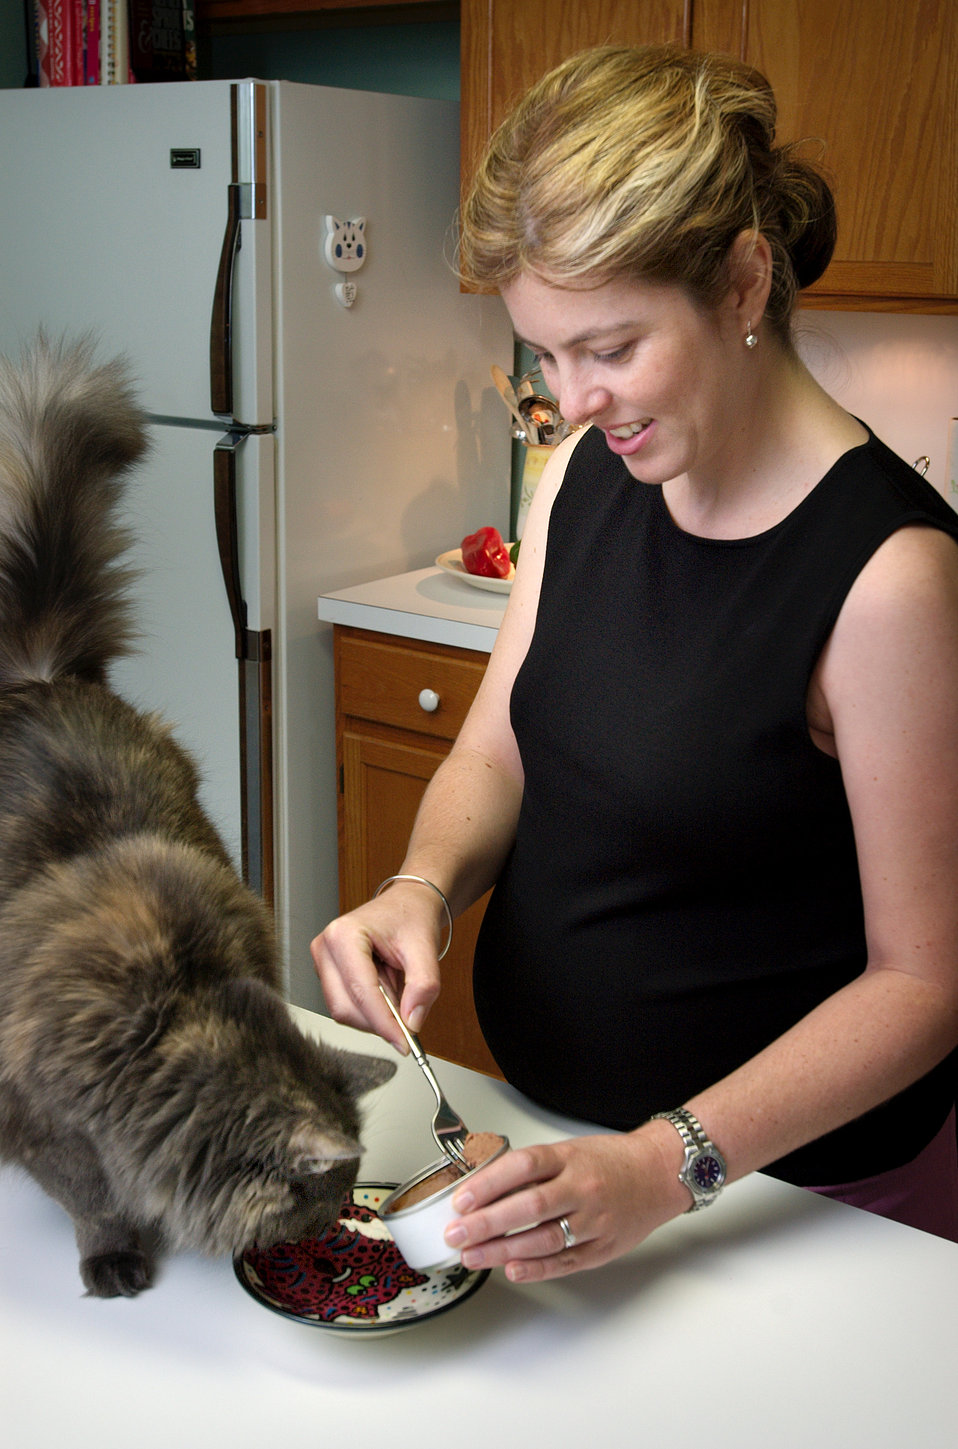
This photograph showed a pregnant woman feeding her cat 'canned' cat food, in order to prevent it from becoming infected with the parasite, Toxoplasma gondii. An infected cat can cause harm to individuals with a weakened immune system, and a pregnant woman's unborn child. Though feeding her cat canned food is a good practice, the cat should also be kept off of any countertops on which food preparation could take place, such as in a kitchen setting.